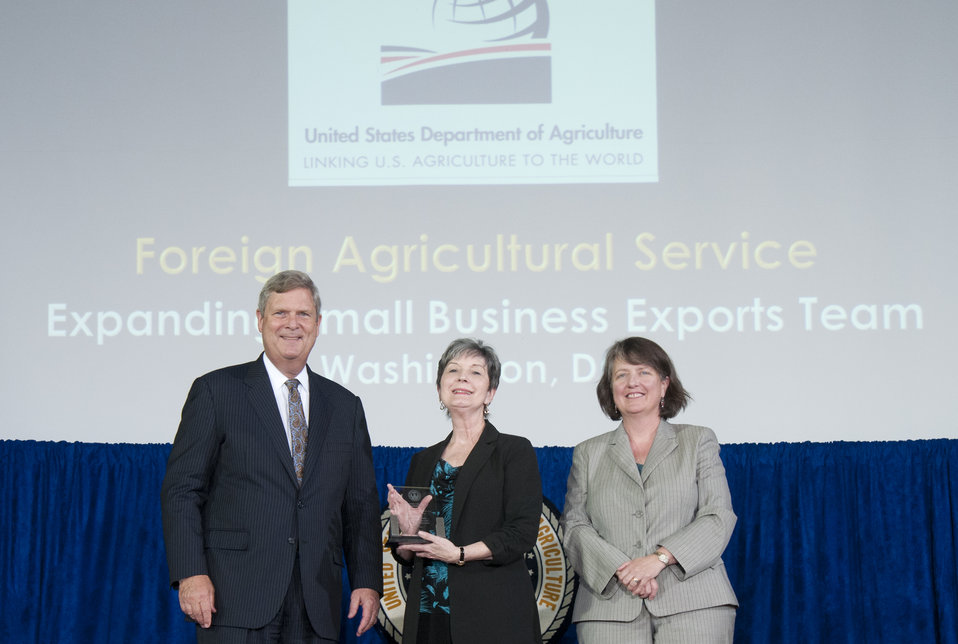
Agriculture Secretary Tom Vilsack and Agriculture Deputy Secretary Kathleen Merrigan present the Secretary’s Honor Award to Expanding Small Business Exports Team Foreign Agricultural Service (FAS) group leader Lynne Reich at the U.S. Department of Agriculture (USDA) 64th Annual Honor Awards Ceremony in Washington, D.C. on Wednesday, Sept. 12, 2012. The Expanding Small Business Exports Team provided superlative outreach to U.S. small businesses in support of agricultural export expansion, a top priority of the President’s National Export Initiative.